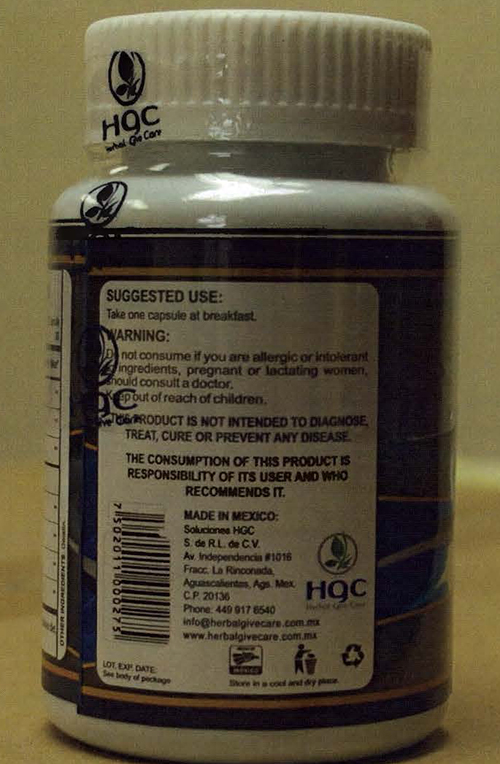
RECALLED – Dietary Supplement

August 16, 2013 – Product Recall – Herbal Give Care LLC Issues Voluntary Nationwide Recall of Esbelder Man Capsules, Esbelder Fem Capsules, and Esbelder Siloutte Capsules Vitamin Supplements Due to Potential Health Risks.